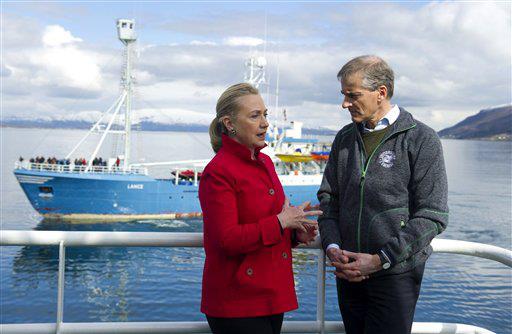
Secretary Clinton and Norwegian Foreign Minister Store Participate in an Arctic Research Vessel Tour

U.S. Secretary of State Hillary Rodham Clinton and Norwegian Foreign Minister Jonas Gahr Store participate in an Arctic research vessel tour in Tromso, Norway, on June 2, 2012.